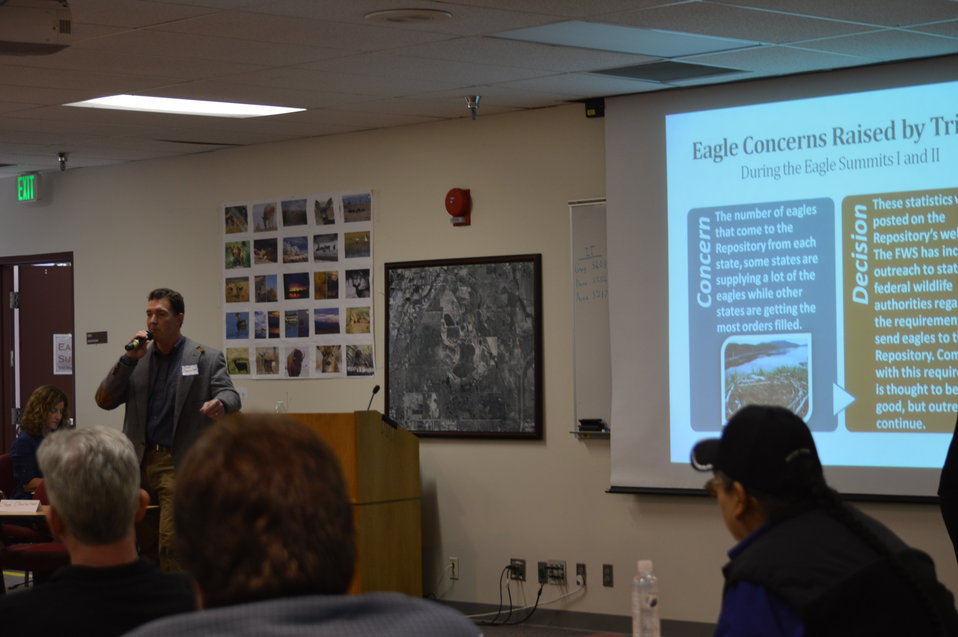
Eagle Summit III in Denver, Colorado on March 20, 2014 at the Rocky Mountain Arsenal National Wildlife Refuge.